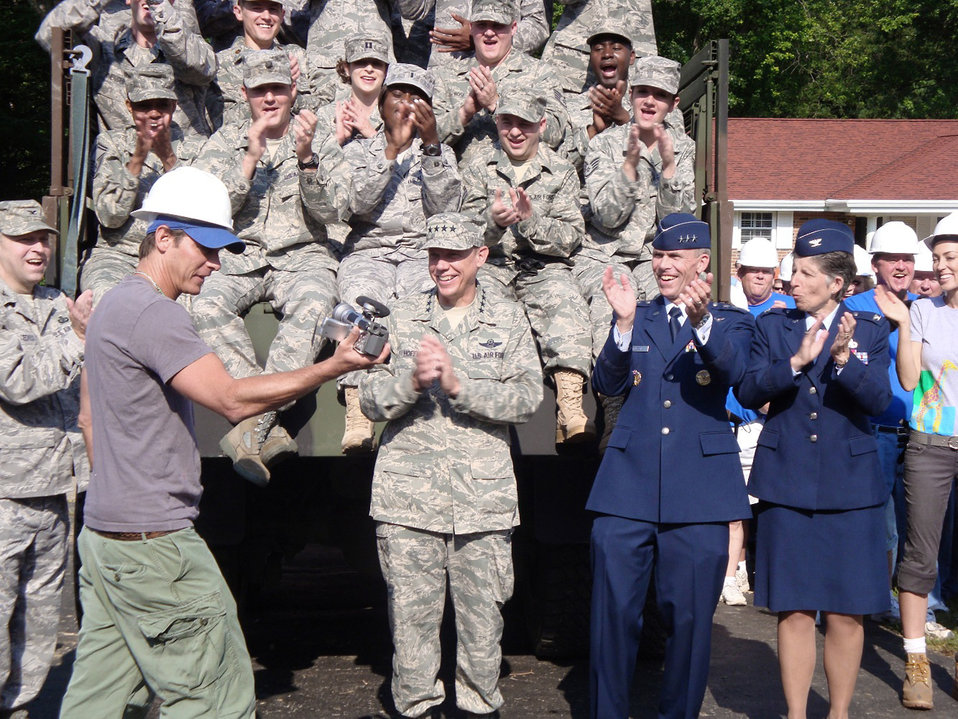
Air Force volunteers pitch in for co-worker's 'Extreme Makeover: Home Edition'

Ty Pennington, the star of the ABC series 'Extreme Makeover: Home Edition